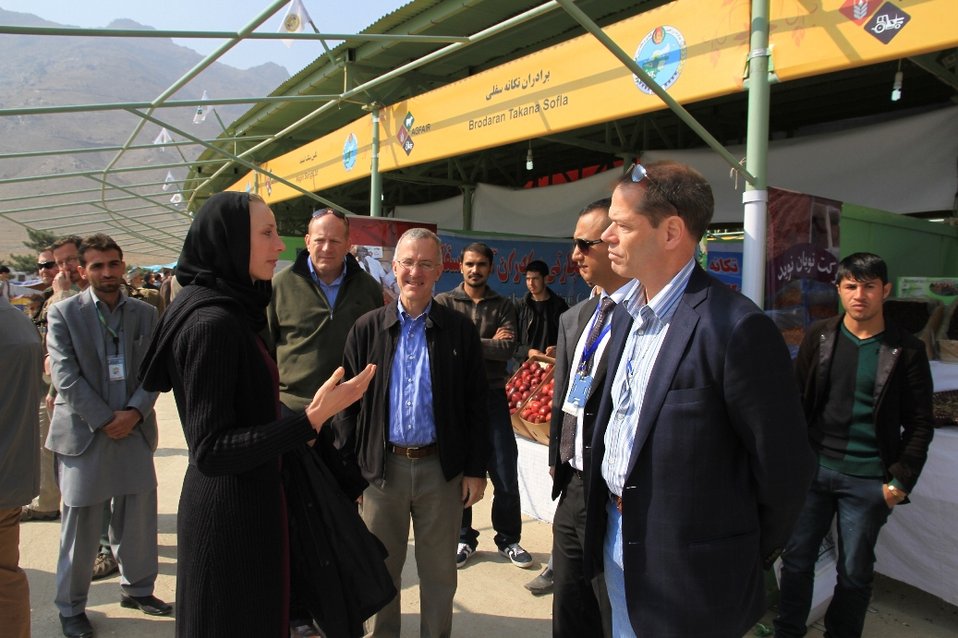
Ag.Fair, October 2013

William Hammink (C) and Larry Sampler (R) speak with exhibition visitor